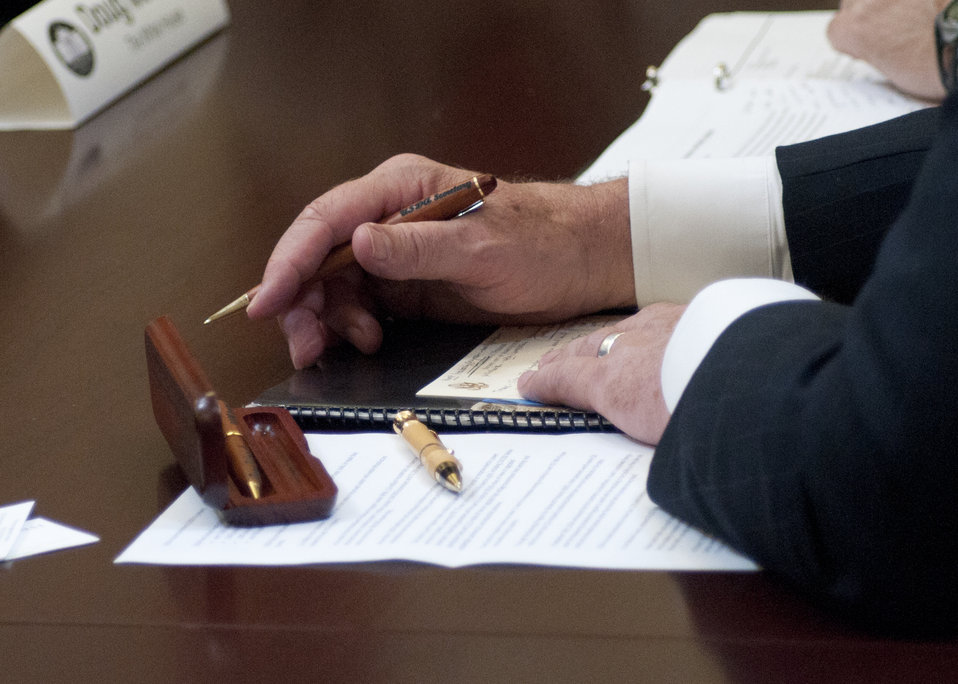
On Wednesday, Jul. 6, 2011, Agriculture Secretary Tom Vilsack attended a meeting at the White House in Washington, DC, with President Barack Obama, the President's Domestic Policy Adviser Melody Barnes and rural communities leaders from across the country for the White House Rural Champions of Change event. The purpose of this meeting is to strengthen rural communities and promote economic growth. Prior to coming here, they were posed with a question about, what should/should not the government be doing to strengthen rural communities and promote economic growth.